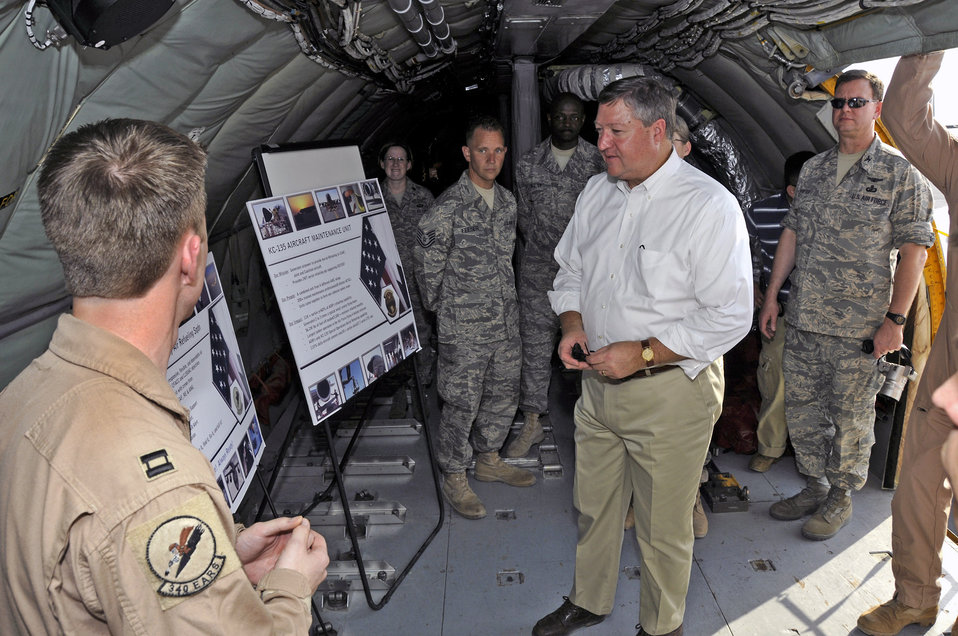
Secretary visits Airmen in Southwest Asia

Capt. James Blech briefs mission capabilities to Secretary of the Air Force Michael B. Donley Oct. 11 at a Southwest Asia air base. The secretary toured five different airframes at the base. Captain Blech is the 340th Expeditionary Air Refueling Squadron assistant director of operations.